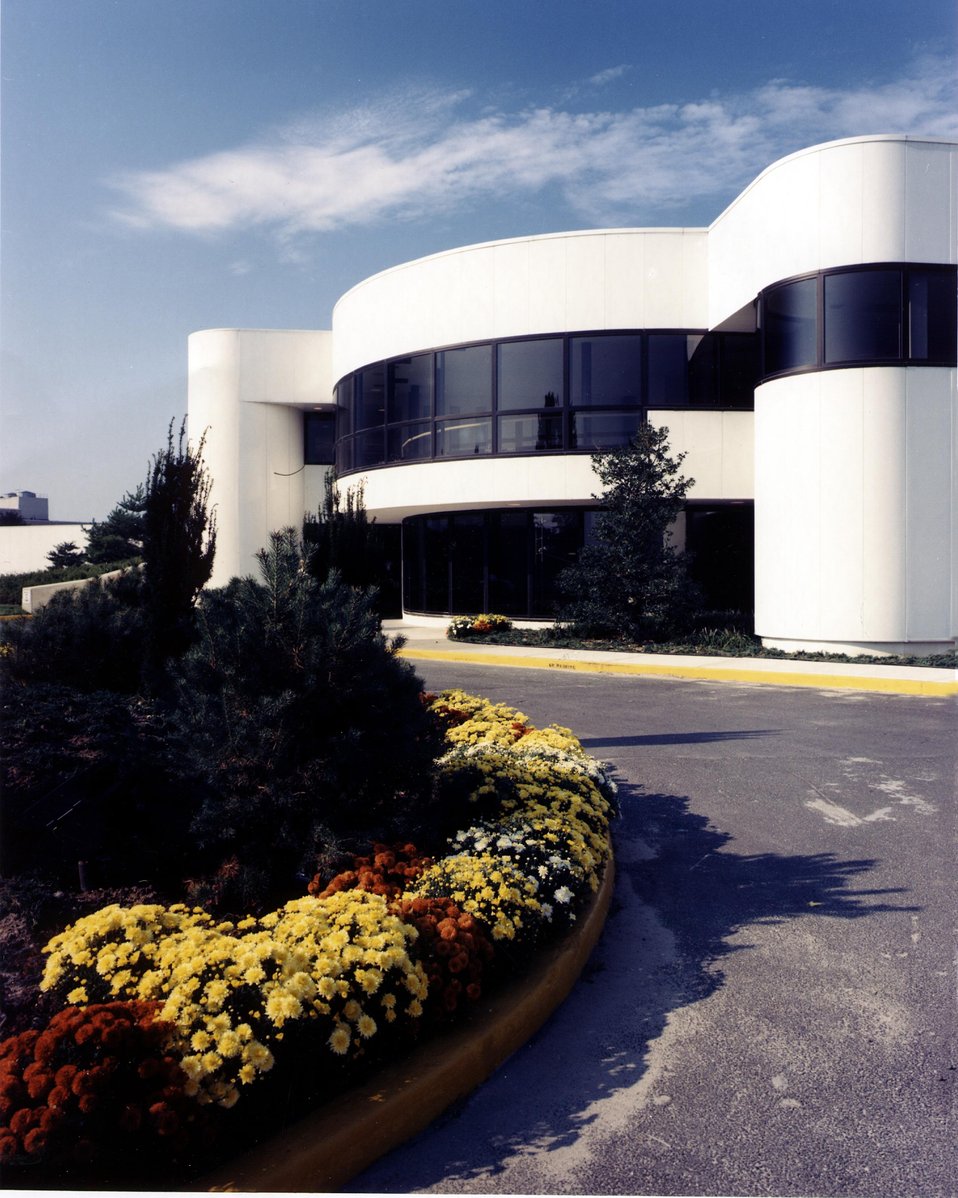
FRONT ENTRANCE TO THE NATIONAL SYNCHROTRON LIGHT SOURCE.

THE NATIONAL SYNCHROTRON LIGHT SOURCE (NSLS) AT BROOKHAVEN NATIONAL LABORATORY IS THE WORLD'S LARGEST FACILITY FOR SCIENTIFIC RESEARCH USING X-RAYS, ULTRAVIOLET AND INFRARED RADIATION. DURING THE COURSE OF A YEAR, WELL OVER 2,000 SCIENTISTS FROM ALMOST 300 UNIVERSITIES, INDUSTRIAL CORPORATIONS AND OTHER LABORATORIES USE THE NSLS FOR RESEARCH IN PHYSICS, CHEMISTRY, BIOLOGY AND MATERIALS SCIENCE.